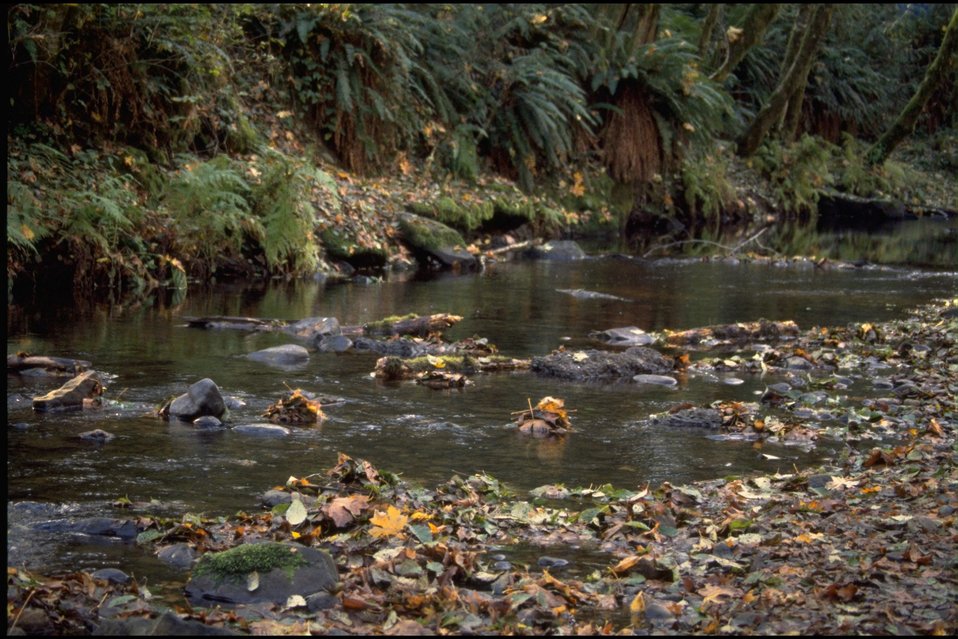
Whittaker Creek.